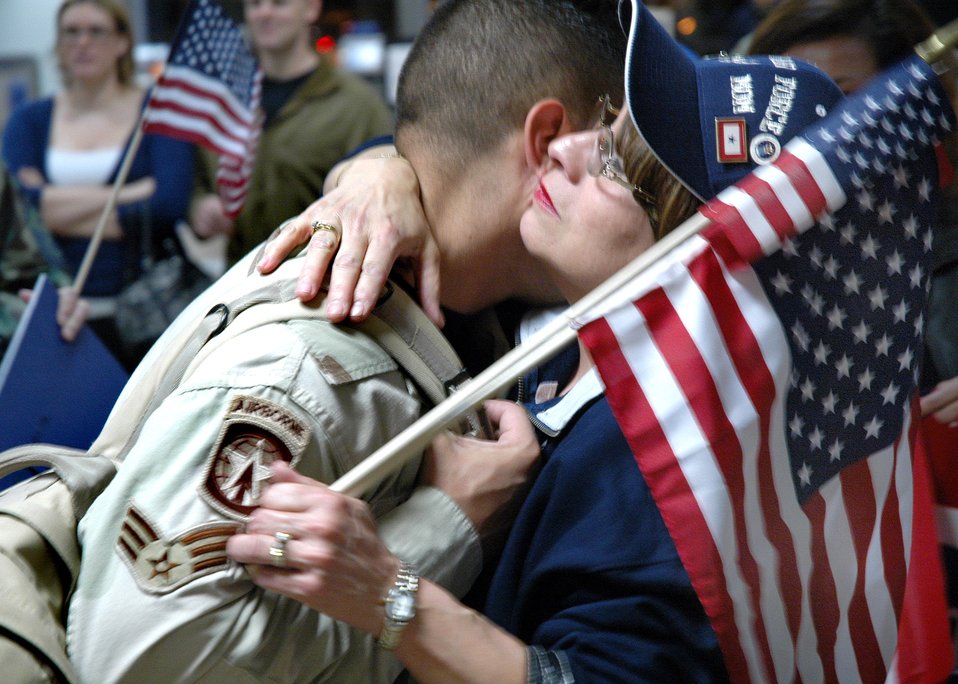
A hero's welcome

Rita Coughlin welcomes home her son Senior Airman Michael Coughlin at Sacramento International Airport. Airman Coughlin was one of four Air Force Reservists from the 940th Security Forces Squadron at Beale Air Force Base, Calif., who returned home March 4 after six months' service at Camp Bucca, Iraq.